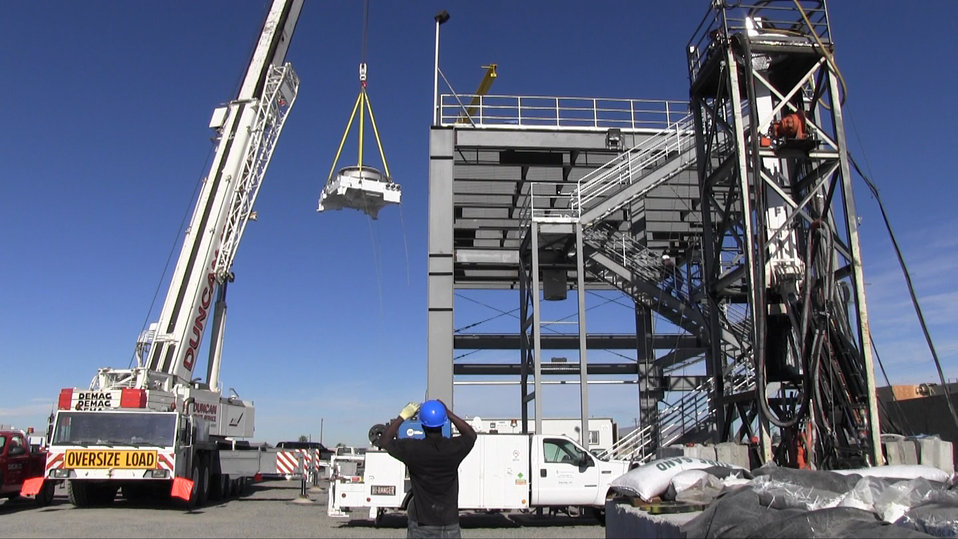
ORP Waste Retrieval System

Components of a waste retrieval system that uses a vacuum mounted on the end of a remotely operated arm are lifted into place on a test platform near the Hanford Site. The system uses little or no liquids to remove waste from underground storage tanks, making it ideal for use in tanks that are known or suspected to have leaked.